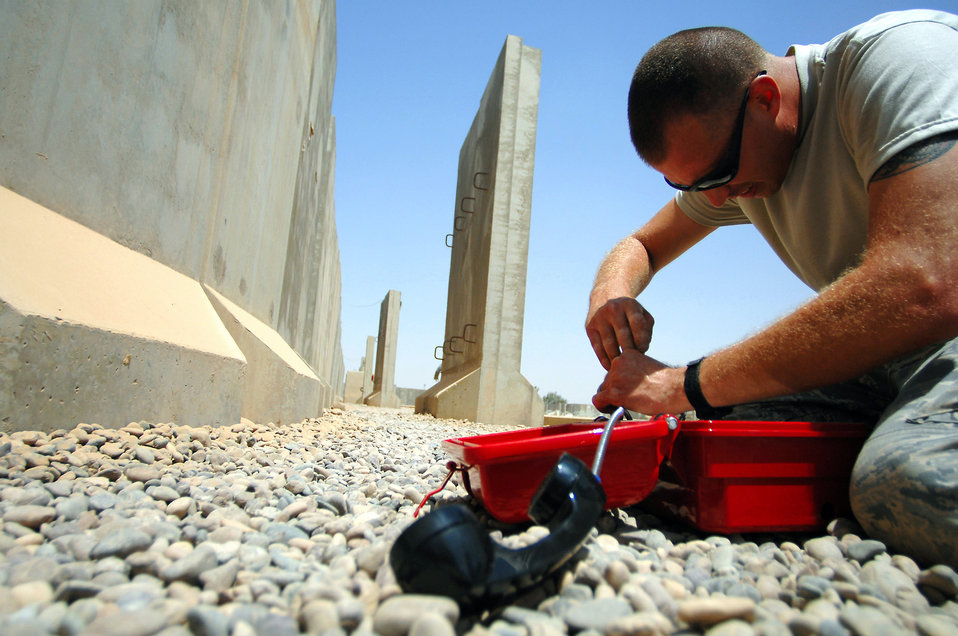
Emergency life line

Staff Sgt. Phillip Balson installs an emergency phone June 13 at Balad Air Base, Iraq. The phones are used to establish personnel accountability during emergency situations. The infrastructure shop is installing a total of 124 lines throughout the Air Force housing area. Sergeant Balson is a 332nd Expeditionary Communications Squadron infrastructure technician deployed from Tinker Air Force Base, Okla.